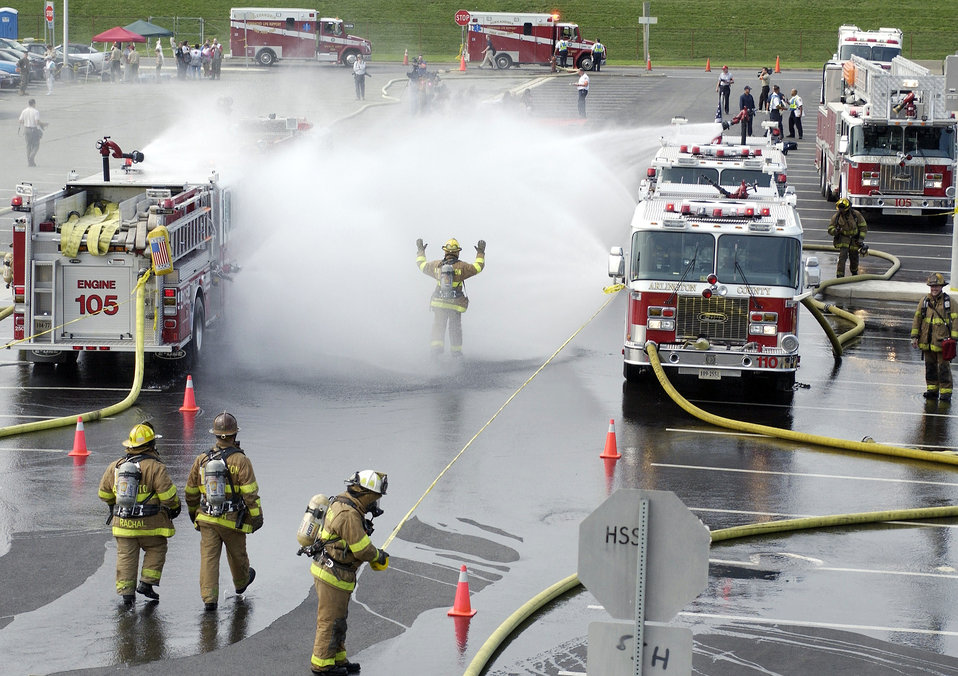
Gallant efforts

WASHINGTON -- Firefighters from Arlington County, Va., set up a decontamination area in the Pentagon's south parking lot during exercise Gallant Fox on July 24. Gallant Fox is a large-scale chemical, biological, radiological and nuclear-training exercise conducted by the Pentagon Force Protection Agency. The exercise provides training in responding to real-world mass casualty scenarios by various local emergency fire, police, medical and hazardous-material response units.